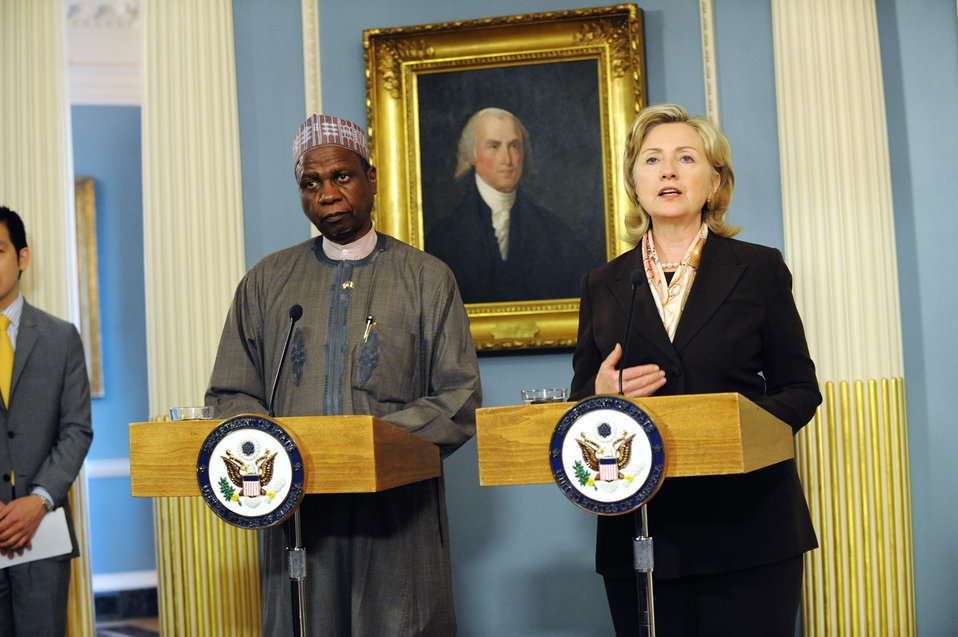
Secretary Clinton Meets With Nigerian Secretary to the Federal Government

U.S. Secretary of State Hillary Rodham Clinton holds a bilateral meeting with Nigerian Secretary to the Federal Government Yayale Ahmed, at the U.S. Department of State in Washington, DC April 6, 2010.